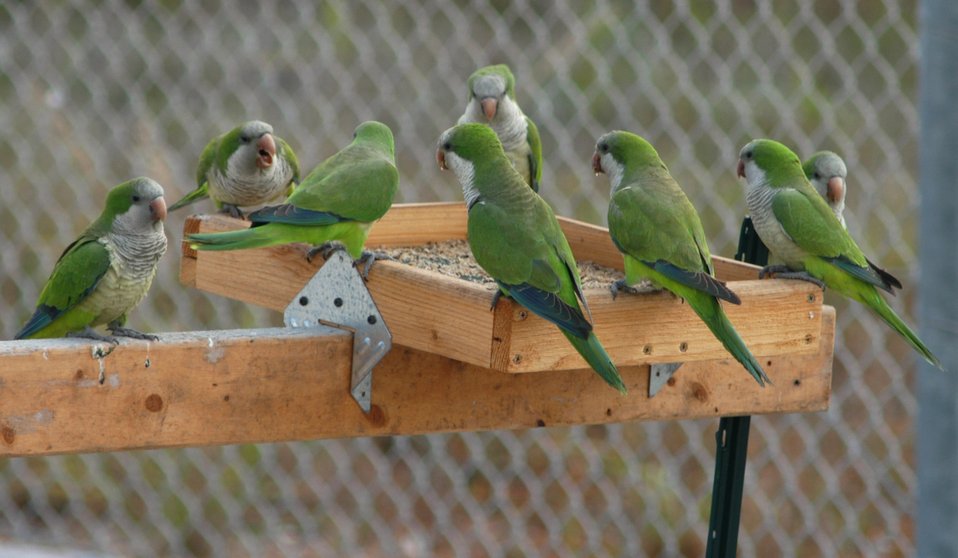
The U.S. Department of Agriculture's (USDA) Animal Plant Health and Inspection Service (APHIS) Wildlife Services (WS) researchers are investigating the use of an oral contraceptive bait to reduce the number of invasive monk parakeets in States such as Florida, Illinois and Texas.